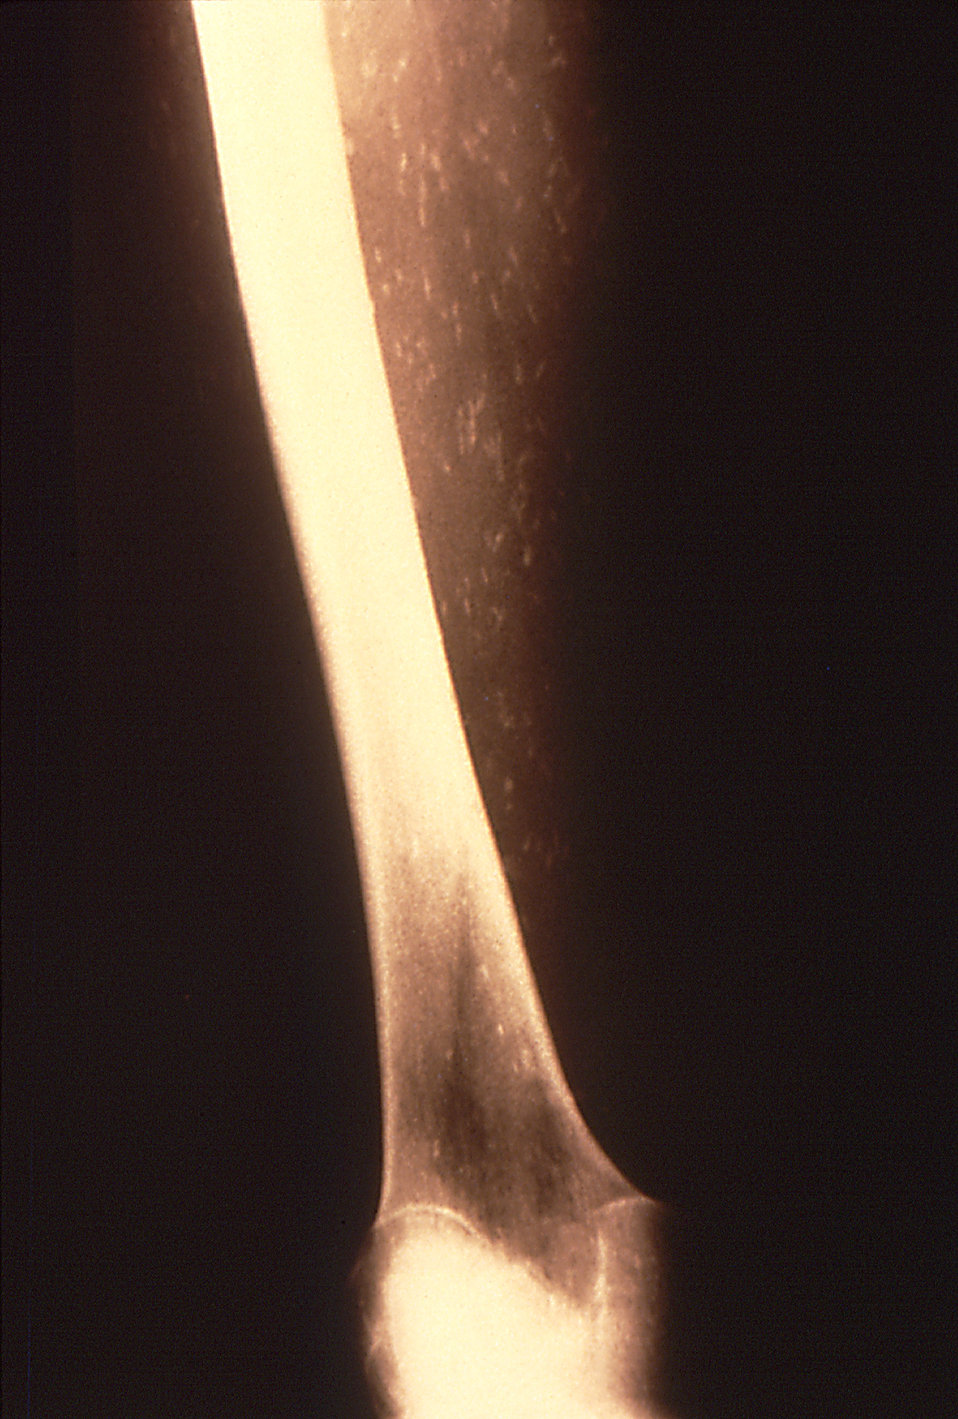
This x-ray reveals cysticercosis of the muscle due to the presence of the cestode Taenia saginata, or beef tapeworm.